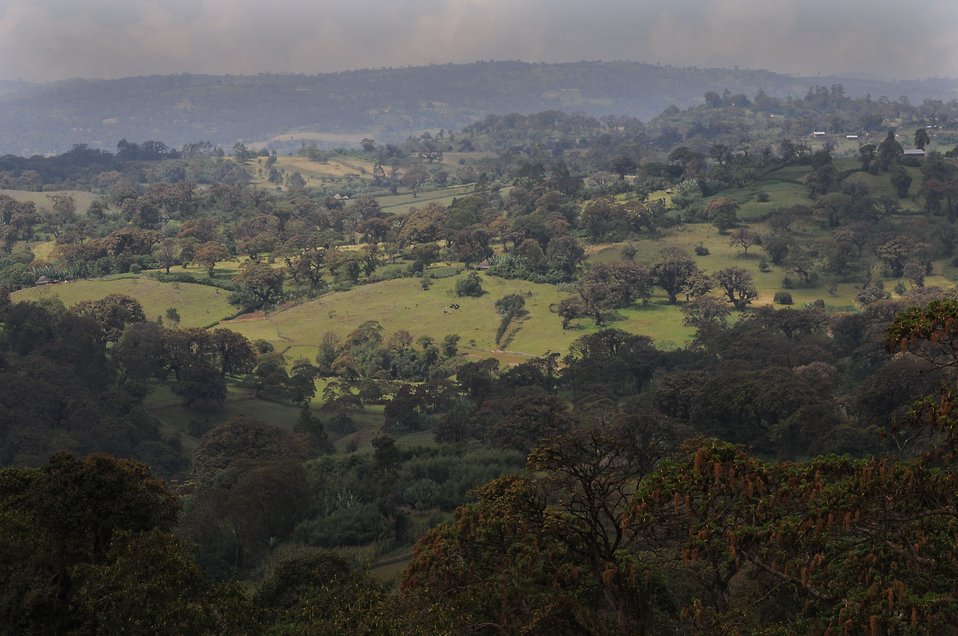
144 hours in Ethiopia: Into the Land of Plenty

The sun shines on a valley below the road to Negele Borena, Ethiopia, Dec. 5, 2011. According to Addisu Wedhao, the attache to the U.S. Embassy in Ethiopia, the mountainous areas of Ethiopia are home to various types of vegetation and fertile soil, which contributes to the growing economy of the country.